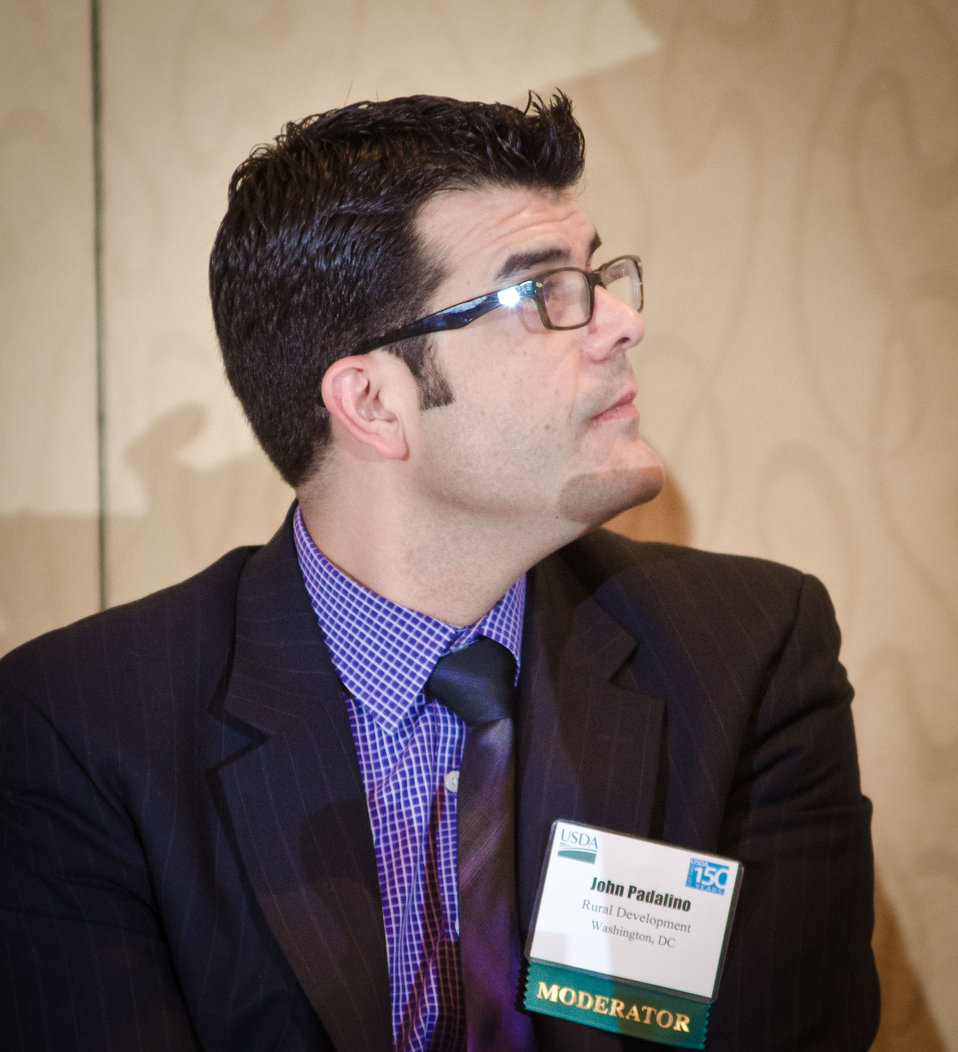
Agriculture’s Rural Development Chief of Staff John Padalino moderated the Rural Development session on “Why Every American Should Care About the Future of Rural Water,” at the 2012 Agricultural Outlook Forum, “Moving Agriculture Forward, Growing, Innovating and Celebrating 150 Years” held at the Crystal Gateway Marriott Hotel, Arlington, Virginia, on Friday, February 24, 2012. This year’s forum coincides with the 150th anniversary of the Department of Agriculture addressing economics, marketing, research, food safety, nutrition, conservation, rural development, alternative energy, trade and many other agricultural issues.